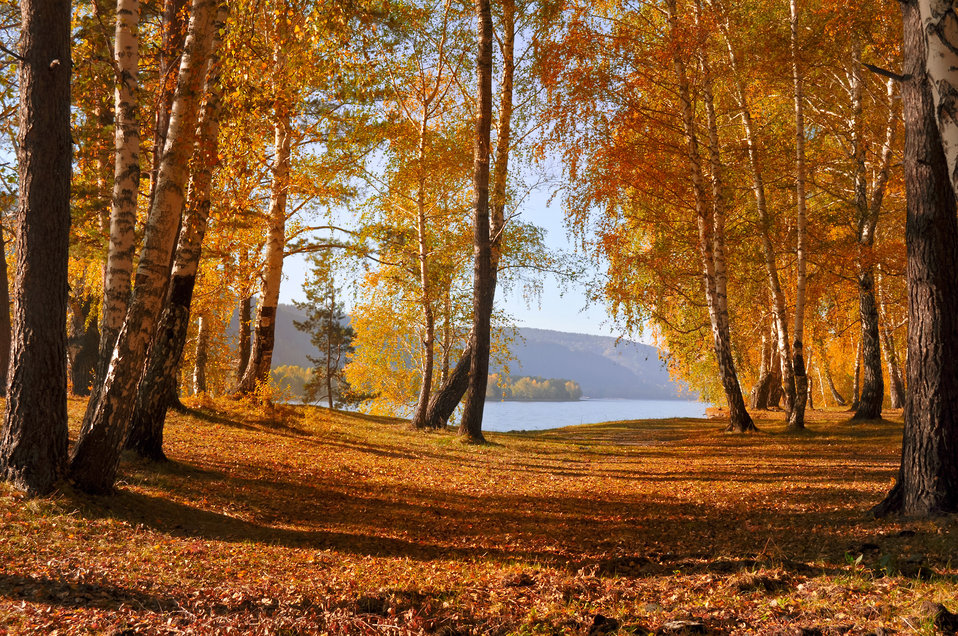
Autumn forest.